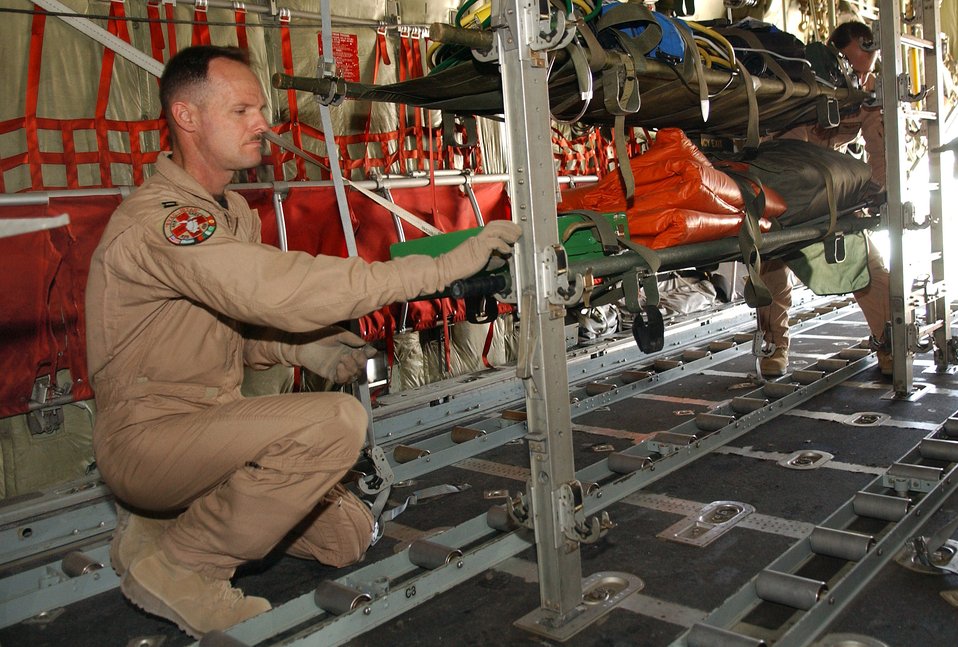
Total force team saves lives

BAGRAM AIR BASE, Afghanistan -- Capt. Robert Roth loads medical equipment in preparation for an aeromedical evacuation mission onto a C-17 Globemaster III aircraft in support of Operation Enduring Freedom. Captain Roth is assigned to the 455th Expeditionary Aeromedical Squadron here and is deployed from Pope Air Force Base, N.C.